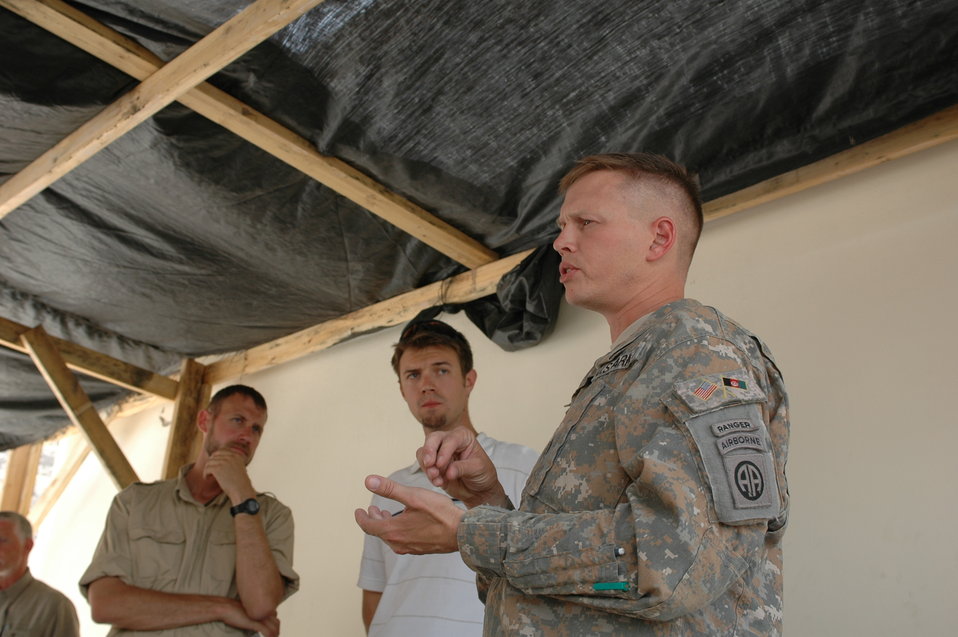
CODEL Berman